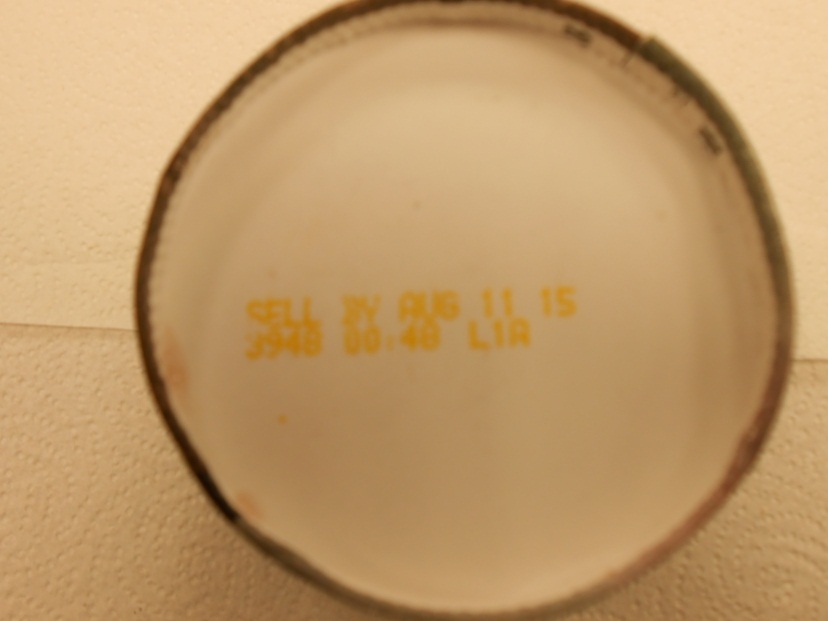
RECALLED - Strawberry Sorbet

April 12, 2014 - Product Recall - Private Selection Sweet Strawberry Sorbet Recalled for Undeclared Allergen.